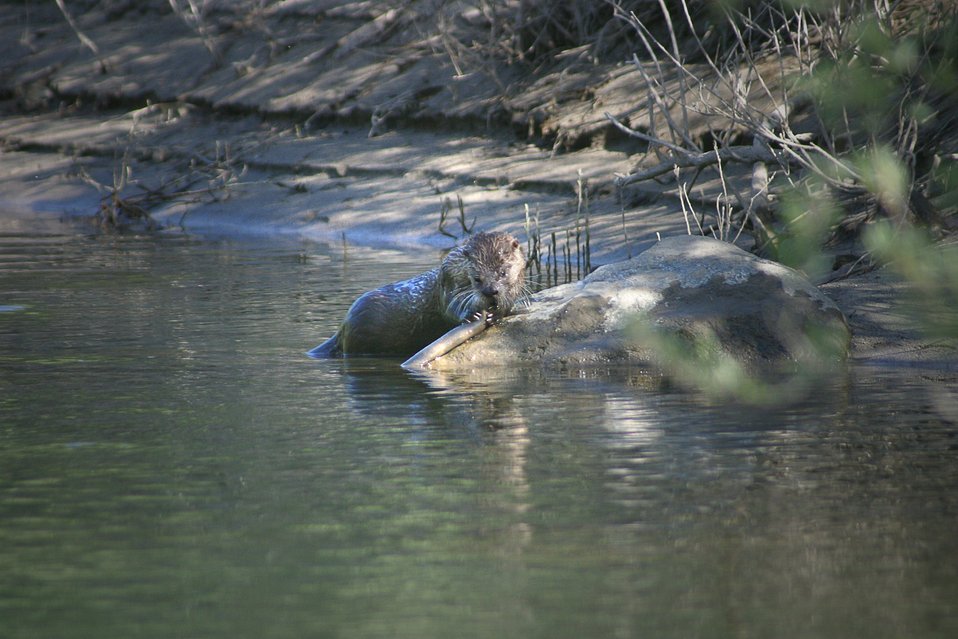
Wild section of the Rogue River from Grave Creek to Foster Bar May 19 to May 22.